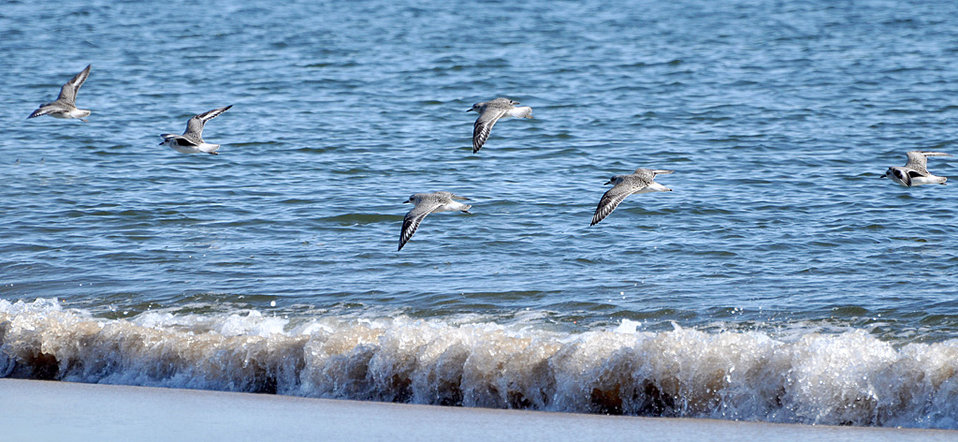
Shorebirds at Parker River National Wildlife Refuge in Newburyport, Massachusetts.